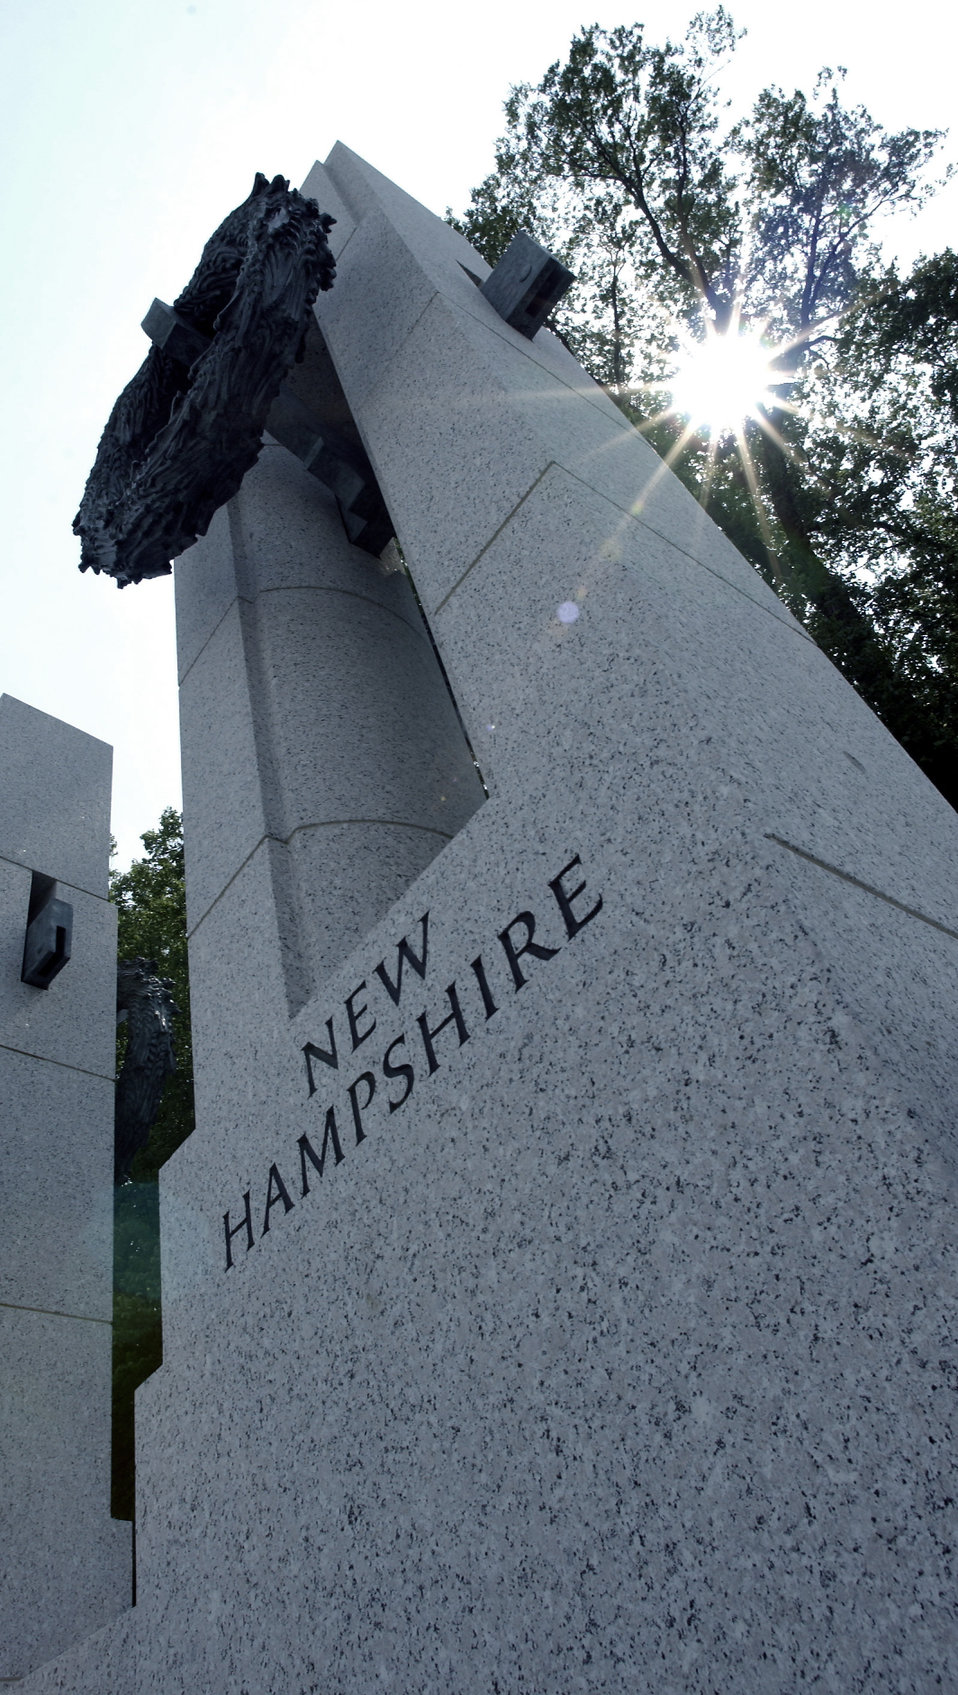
World War II Memorial

WASHINGTON -- The World War II Memorial is nestled between the Lincoln Memorial and Washington Monument on the National Mall here. Names of each U.S. state, territory and the District of Columbia are inscribed on marble pillars in the order that they entered the Union. Bronze oak and wheat wreaths adorn each pillar symbolizing the nation's industrial and agricultural strength.